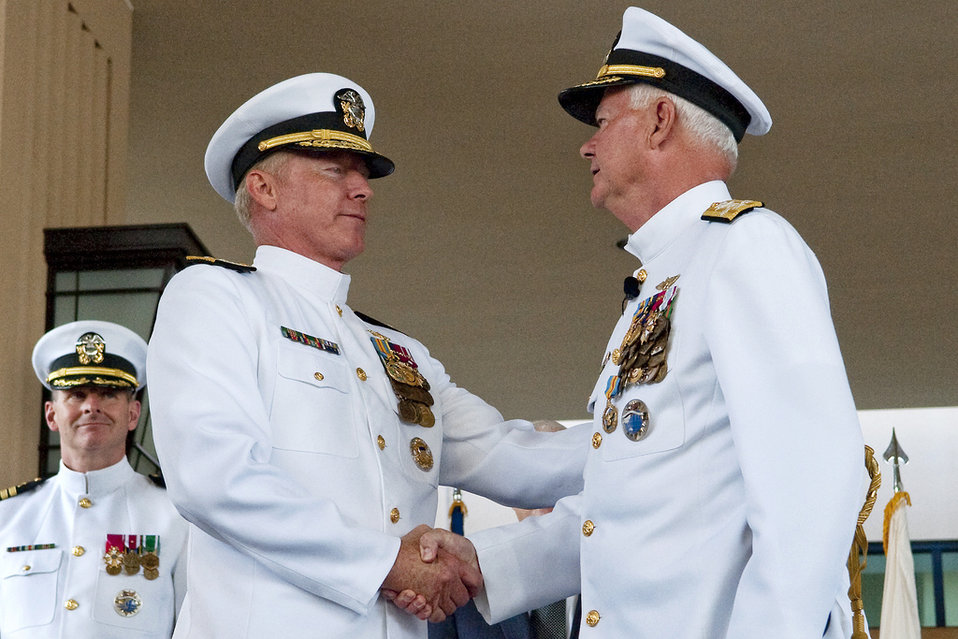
Cleared for release by Joint Staff Public Affairs

091019-N-0696M-269
U.S. Navy Adm. Timothy Keating, is relieved of duty by U.S. Navy Adm. Robert F. Willard at the PACOM change-of-command ceremony, Camp Smith, Hawaii, Oct. 19, 2009.